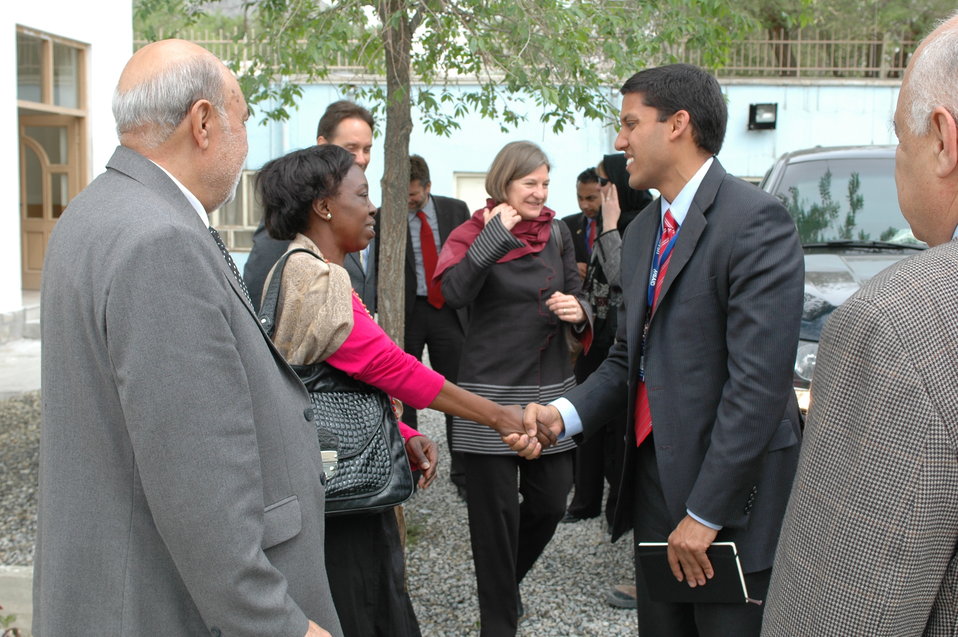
Dr Shah Visits Votech in Kabul